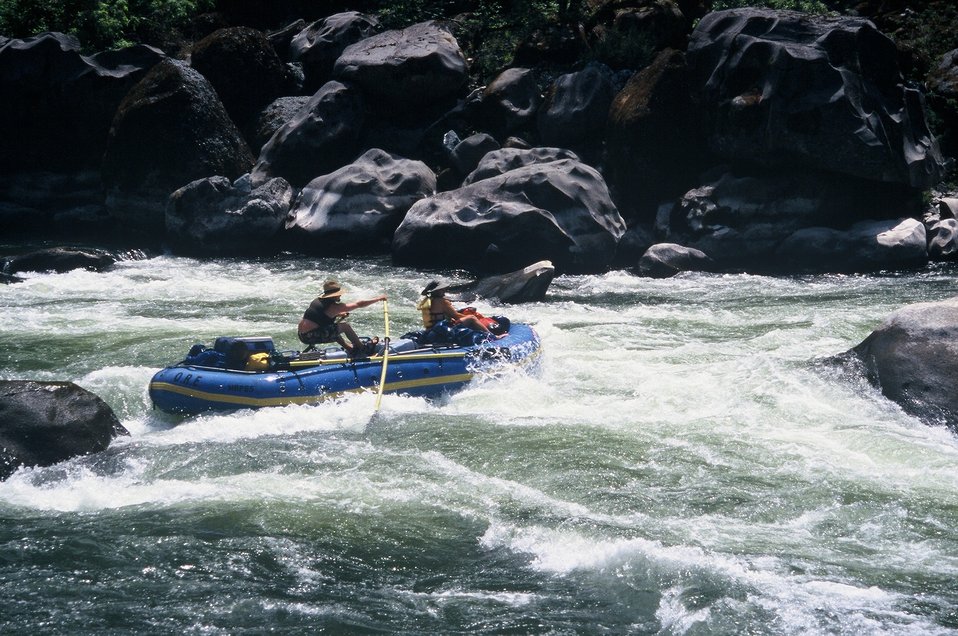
Wild section of the Rogue River from Grave Creek to Foster Bar May 19 to May 22.